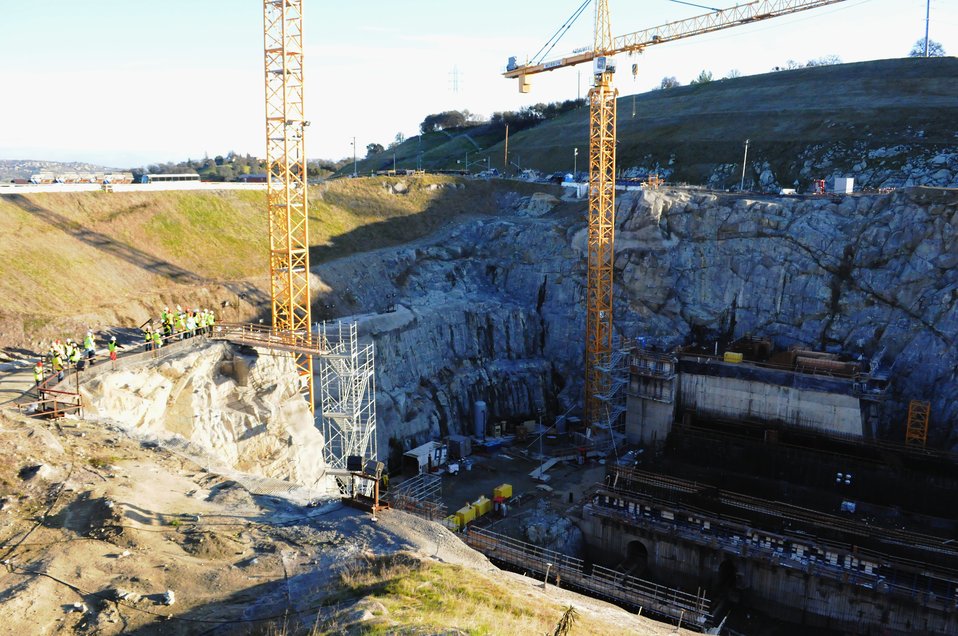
Young engineers visit Folsom Dam Spillway construction site

The Sacramento chapter of the American Society of Civil Engineers Younger Member Forum (featured left) visit the Folsom Dam spillway construction site in Folsom, Calif., Jan. 26, 2013. The ASCE is a national organization that promotes all areas of civil engineering and the younger members forum are recent college graduates. The Folsom Dam spillway will provide enhanced flood damage reduction and dam safety when completed in late 2017.